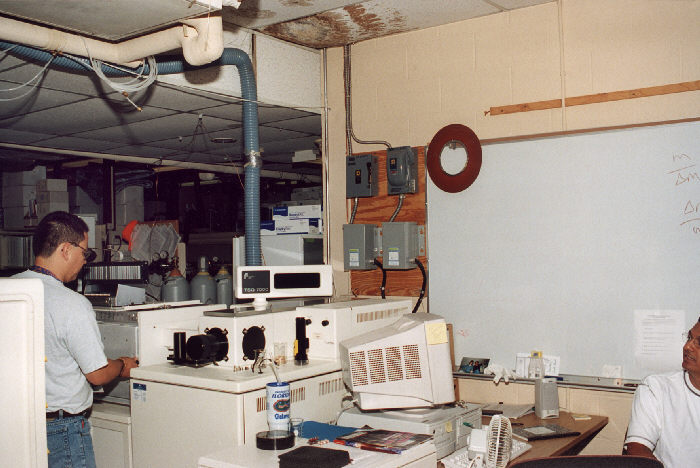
Lab Scene, Building 17, Chamblee, CDC